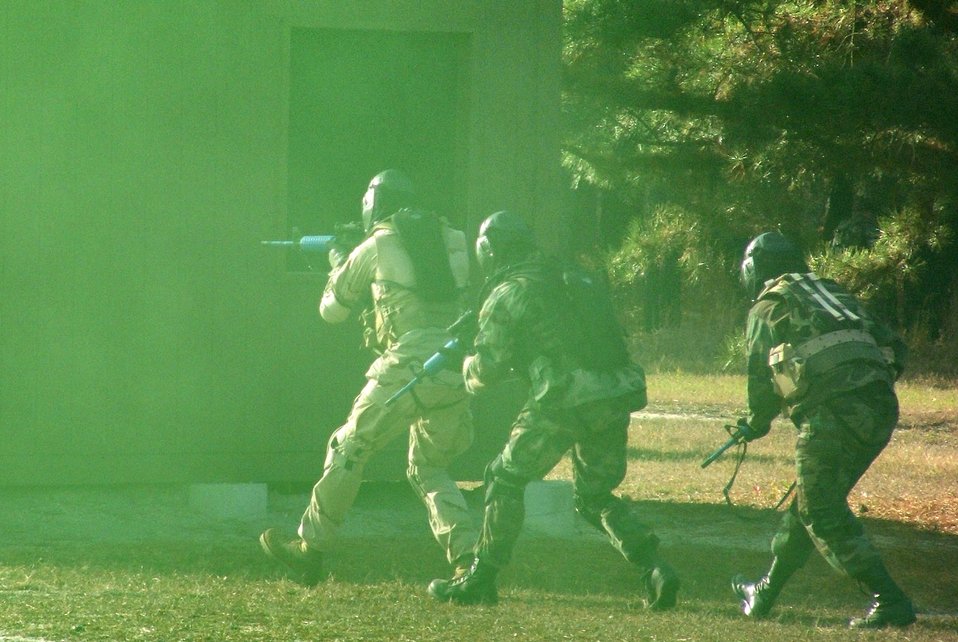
COMBAT INTERROGATOR COURSE

FORT DIX, N.J. (AFPN) -- Airmen participating in contingency skills training for the Combat Interrogator Course 06-1 move together during a scenario for close quarters battle. The class was taught by the 421st Combat Training Squadron at the Air Mobility Warfare Center, Fort Dix, Nov. 14.